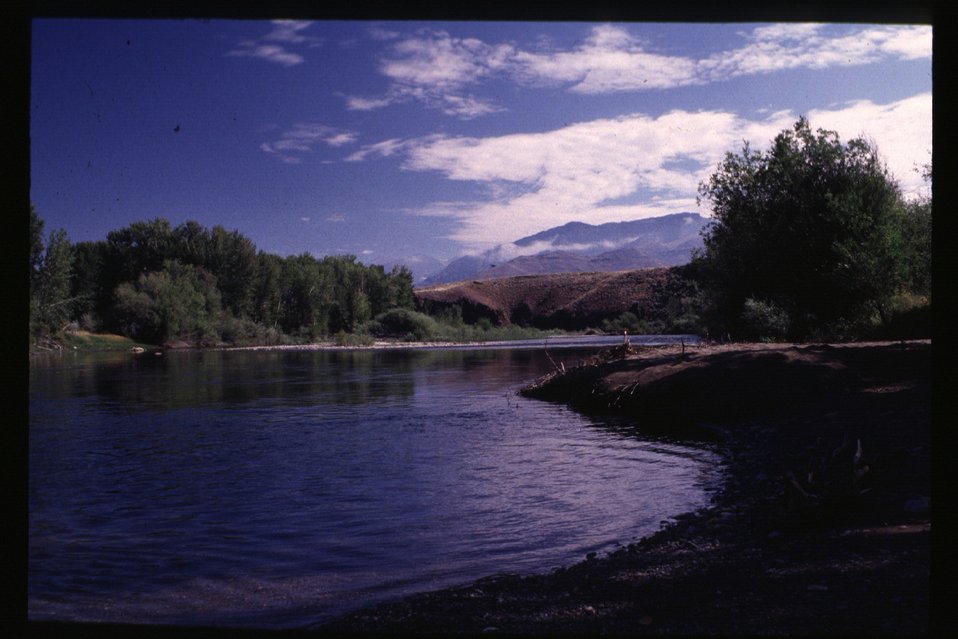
Lewis and Clark National Historic Trail Salmon Field Office UCSC Upper Columbia Salmon Clearwater